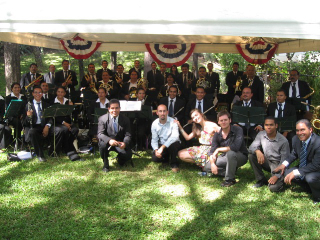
July 4th Celebration at U.S. Embassy in Honduras

The Sasha Masakowski Quartet and la Banda De Los Supremos Poderes pose for a photo during the U.S. Independence Day celebration at the U.S. Ambassador to Honduras’ residence in Tegucigalpa, Honduras, on July 2, 2010.